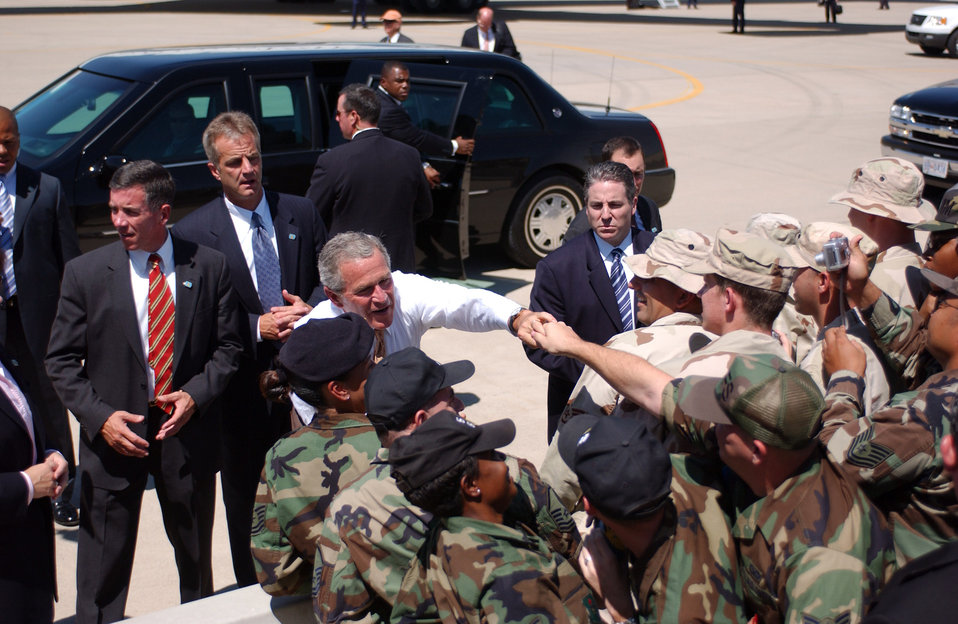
Passing through

LUKE AIR FORCE BASE, Ariz. -- President Bush shakes hands with 56th Fighter Wing Airmen before departing here Aug. 29. The president landed at Luke to attend a town hall meeting in nearby El Mirage.